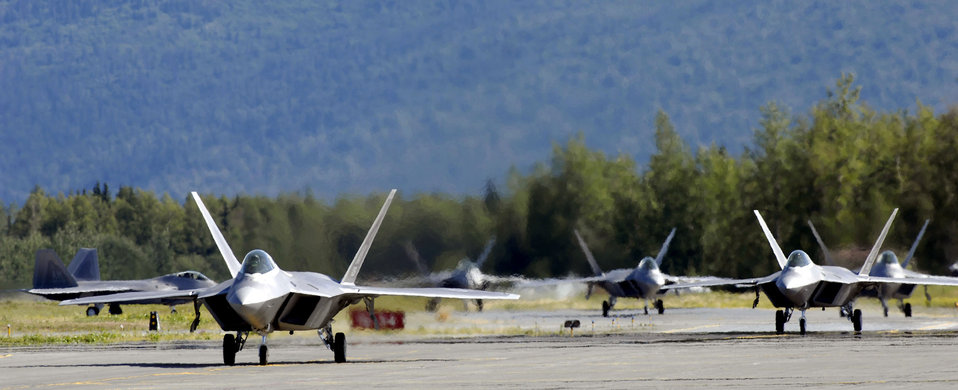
Raptors have arrived!

Six F-22 Raptors taxi following touchdown at Elmendorf Air Force Base, Alaska, during a ceremony marking the aircraft's arrival Aug. 8. The F-22s will join the active duty 3rd Wing and Air Force Reserve Command's 477th Fighter Group here. The 477th FG becomes the first Air Force Reserve unit to operate and maintain the F-22.